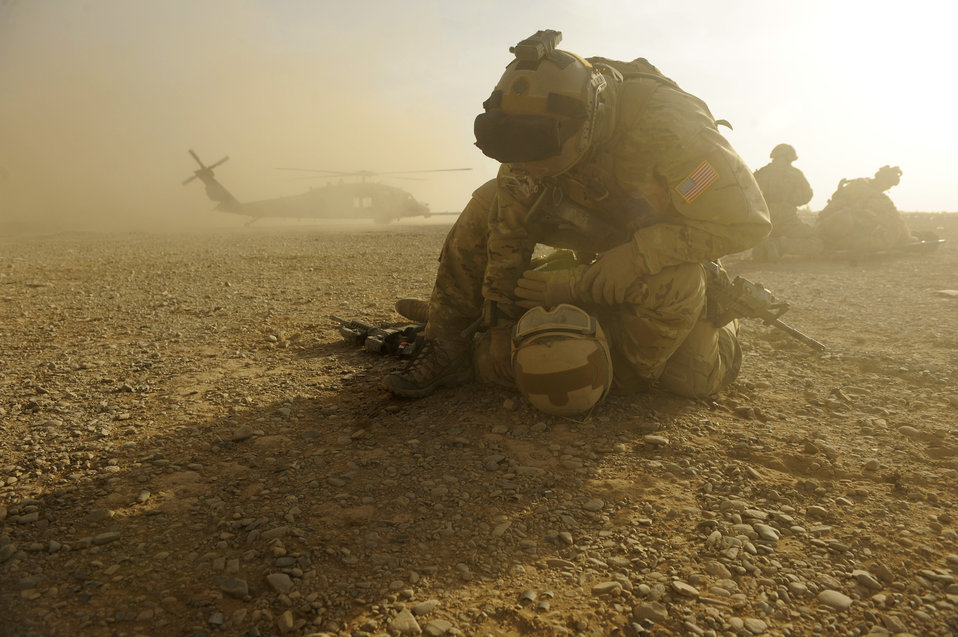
Kandahar Airmen practice evacuation skills

Capt. Nick Morgans covers a simulated 'casualty' to protect him from flying dirt as an HH-60 Pave Hawk lands during a mass casualty scenario Dec. 24, 2010 near Kandahar, Afghanistan.